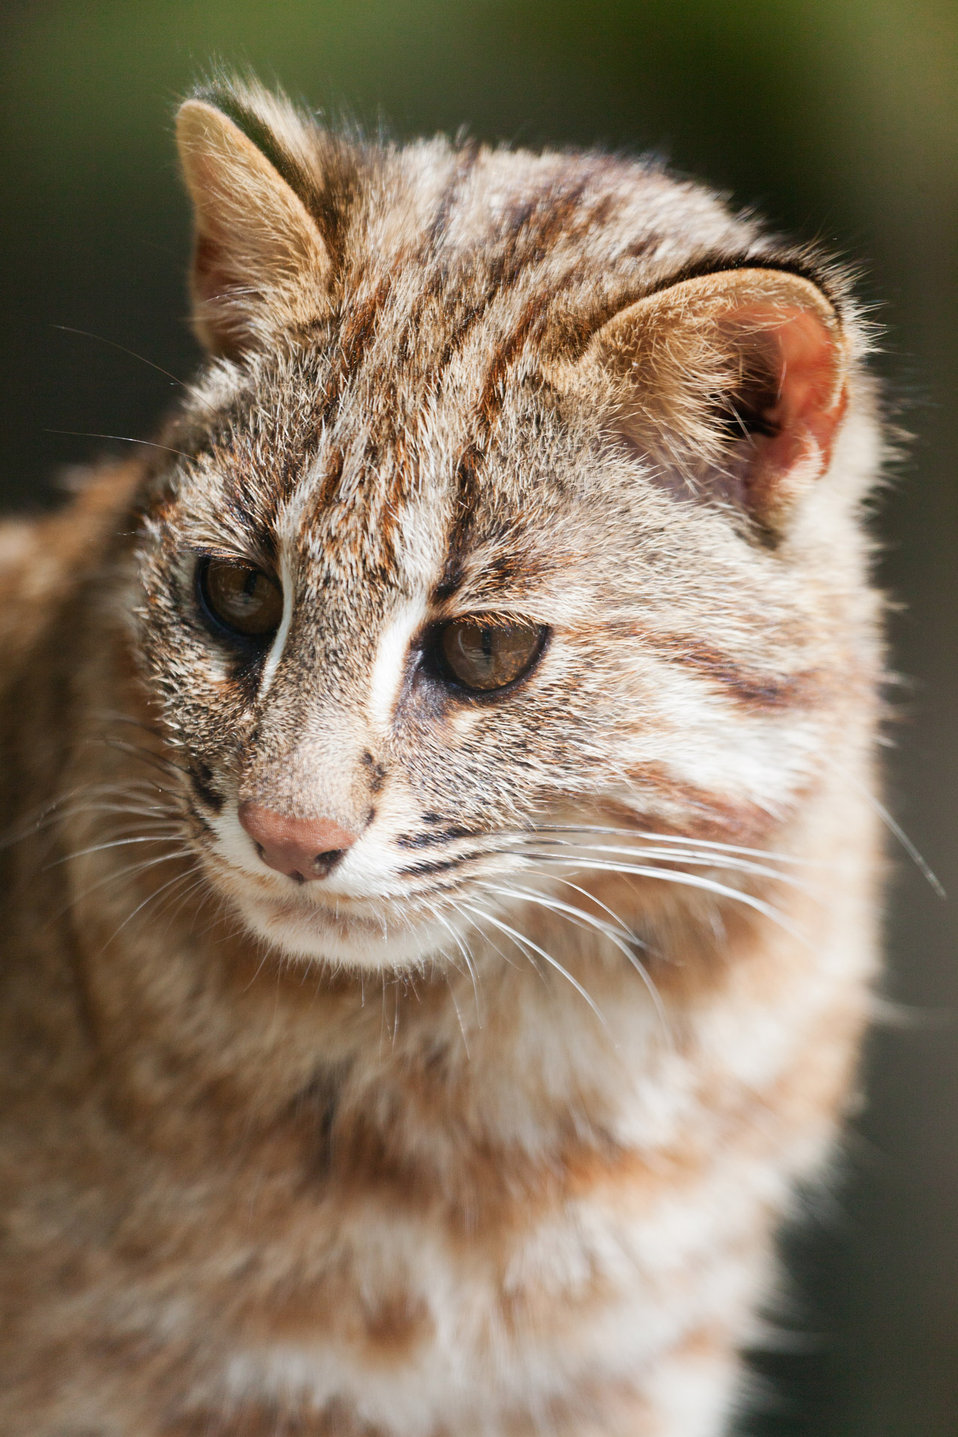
Leopard cat

Small leopard cat portrait.